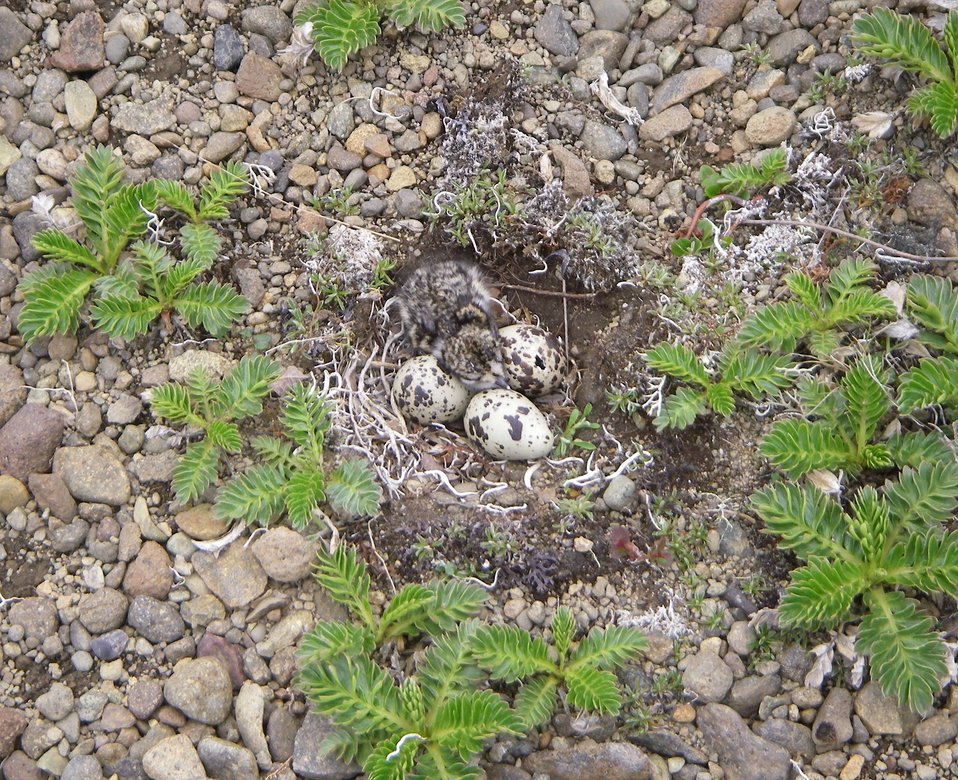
Semipalmated Plover nest

Wilderness north of Kinzarof Lagoon, Izembek National Wildlife Refuge
Photo by Kristine Sowl,
USFWS, Public Domain